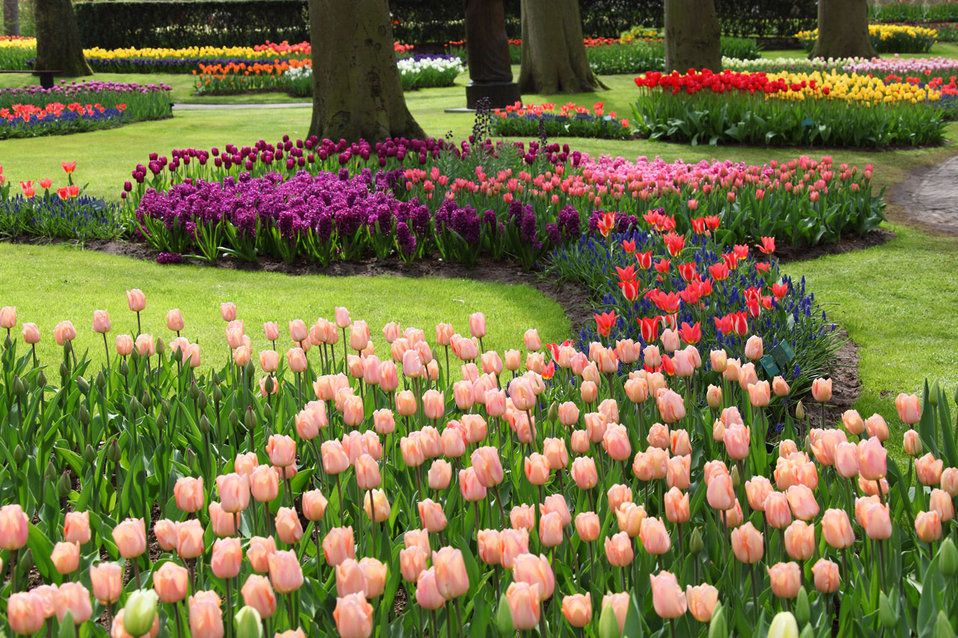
Colorful flowers in keukenhof

Colorful tulips and hyacinths in keukenhof.